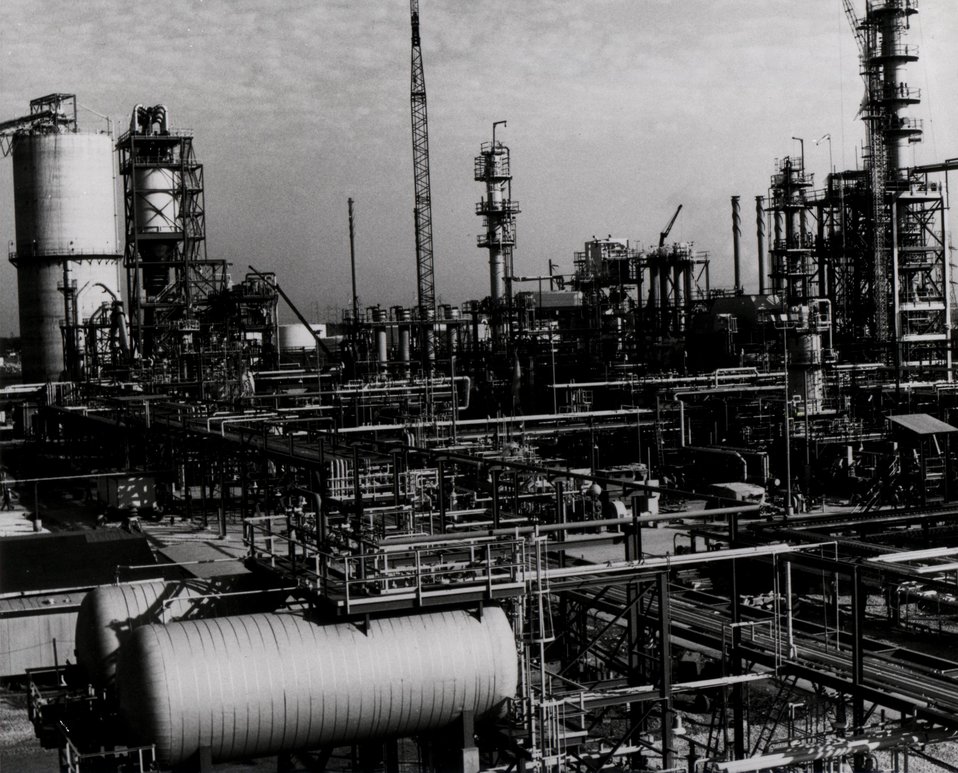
Construction progress of Donor Solvent Coal Liquifaction 250 tons per day Pilot Plant, at Baytown, Texas. Circa 1980.